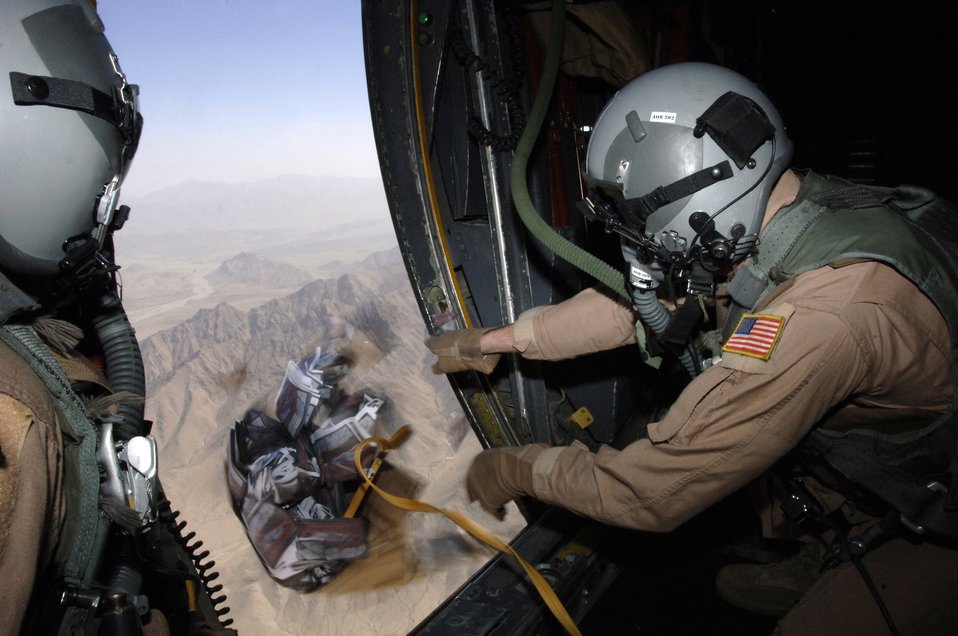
Leaflet airdrop delivers message to Taliban

Airman 1st Class Josh Huffman drops warning leaflets over the mountains of Afghanistan March 6. Leaflets were dropped to warn Taliban extremists not to interfere with coalition activities. The mission was launched to help improve security and the quality of life for Afghan people.